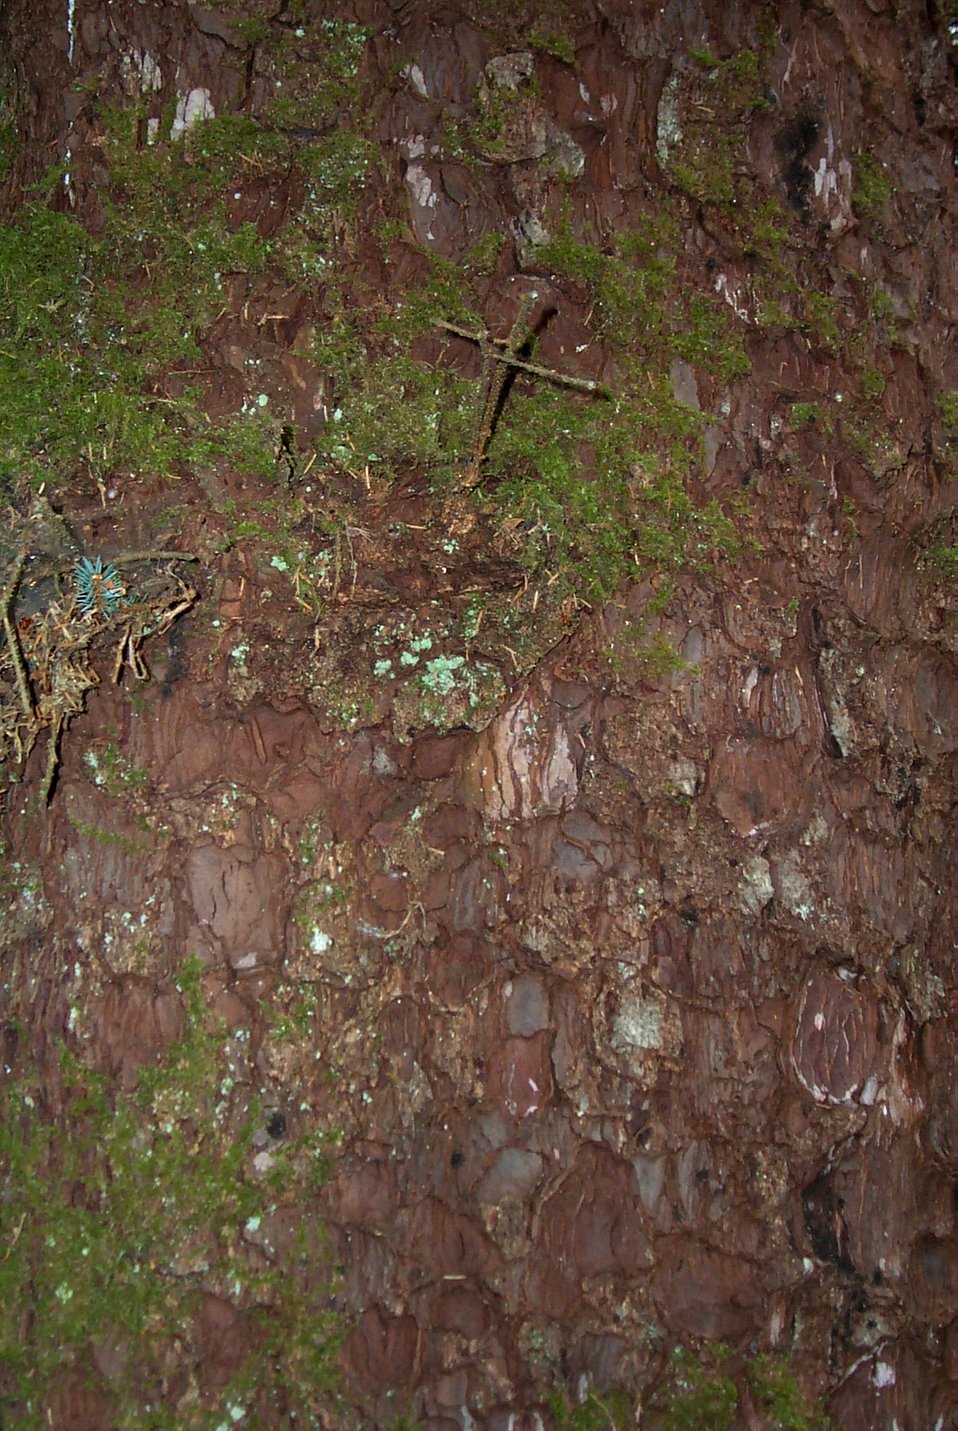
Moss on a coniferous tree on the Oregon coast.